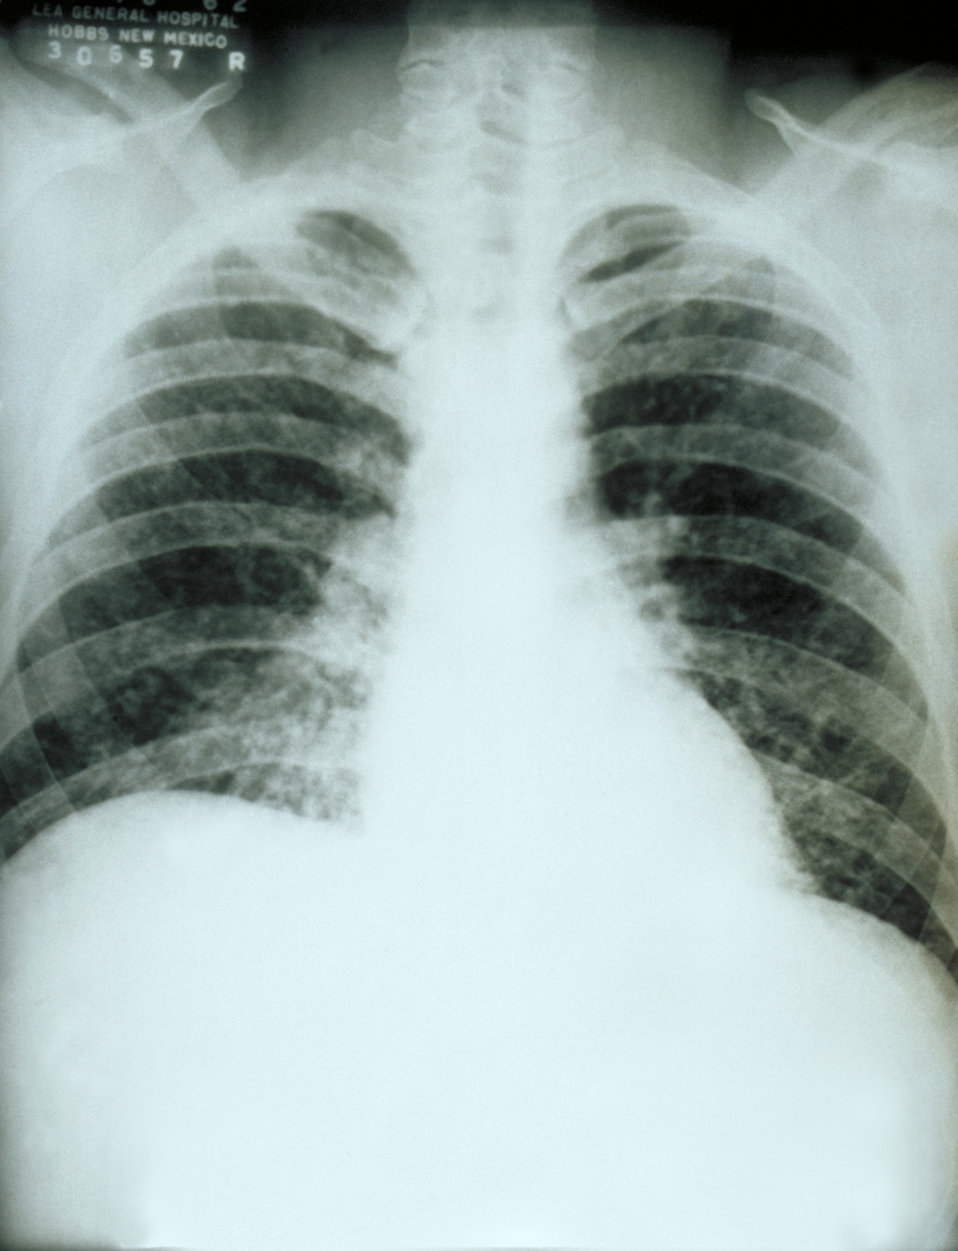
This chest film shows diffuse pulmonary infiltration due to acute pulmonary histoplasmosis caused by H. capsulatum.